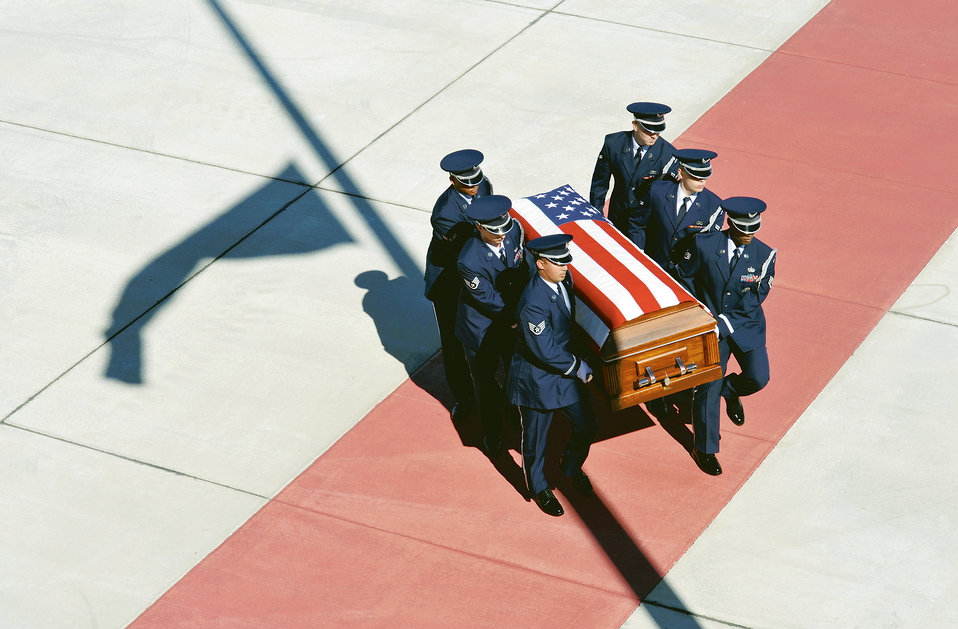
Robins commentary

Robins Honor Guard members carry the casket of Senior Airman Michael Buras to an awaiting hearse Oct. 2, 2010 on the Robins flightline Saturday.